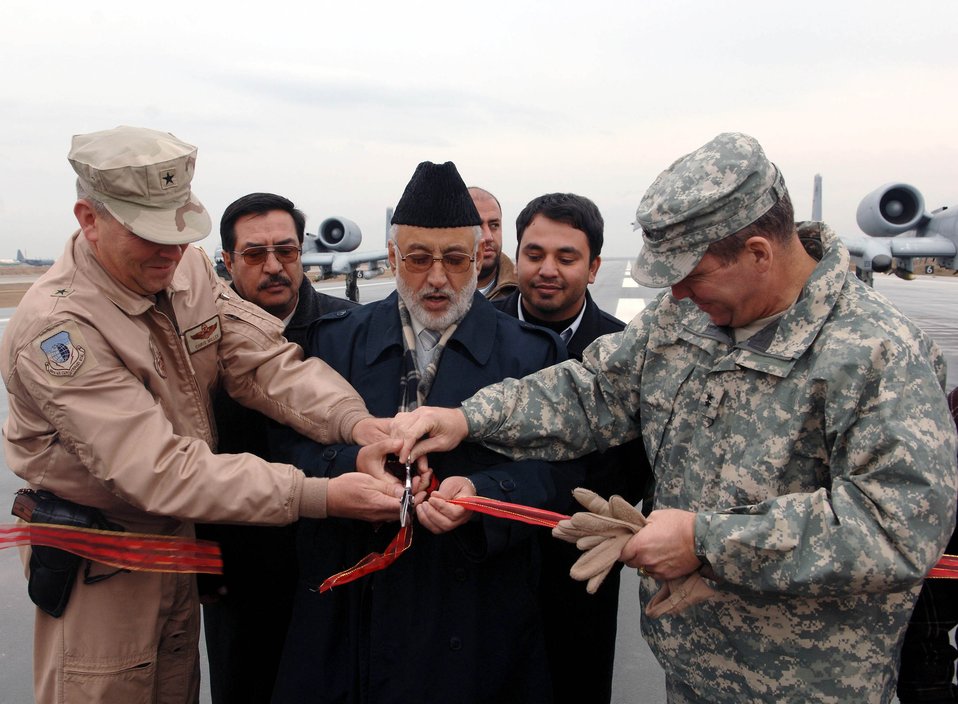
Bagram opens new $68M runway

Brig. Gen. Christopher D. Miller (left) along with Abdul Taqwa, governor of Parwan Province and Army Maj. Gen. Benjamin Freakley cut the ribbon officially opening the new runway Dec. 20 at Bagram Airfield, Afghanistan. The new runway is 2,000 feet longer than the previous runway and can support all of the aircraft in the U.S. inventory. General Miller is the 455th Air Expeditionary Wing commander.